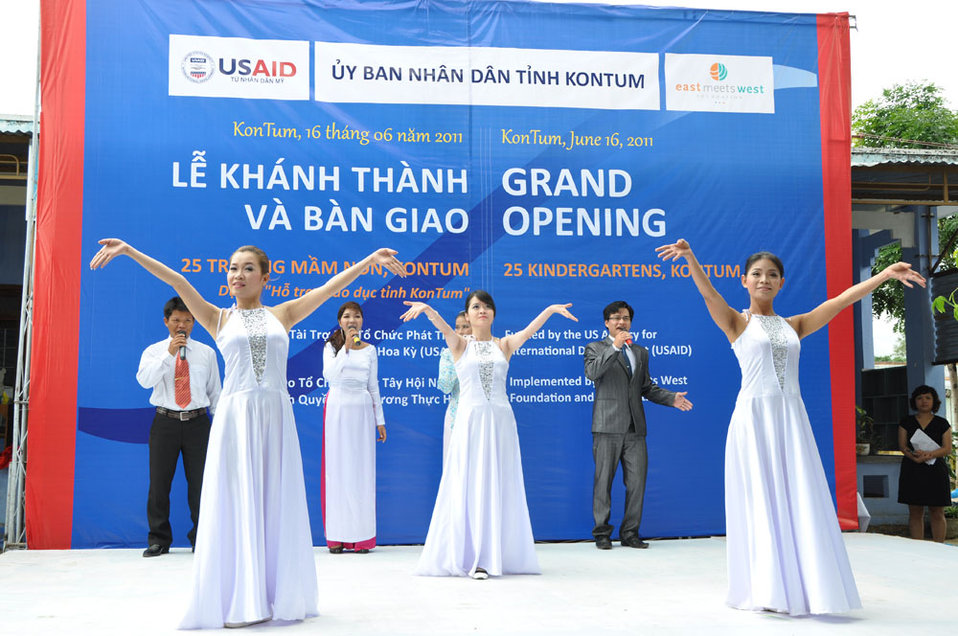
Singers and dancers perform at a kindergarten hand-over ceremony in Kon Tum.